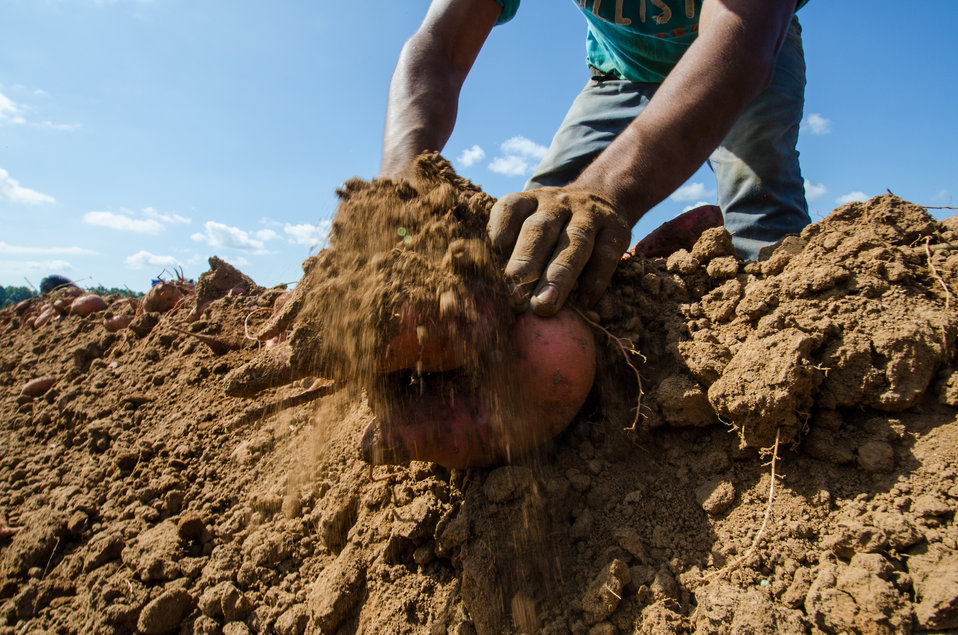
Harvested hand picked large sweet potatoes, at Kirby Farms in Mechanicsville, VA on Friday, Sept. 20, 2013. 200 acres of the farm are devoted to eggplant, spinach, beets, tomato, jalapeno peppers, melons and a variety of greens. Soybeans and small grain are grown on the remaining 300 acres. Using rotational crop practices allows Kirby Farms to double and triple crop yields. Wholesalers, who buy from this farm, sell the produce to major supermarkets in the Mid-Atlantic region, from North Carolina to Maryland. Restaurants in the local area prepare and serve the local bought produce to patrons in the Richmond, VA metropolitan area.